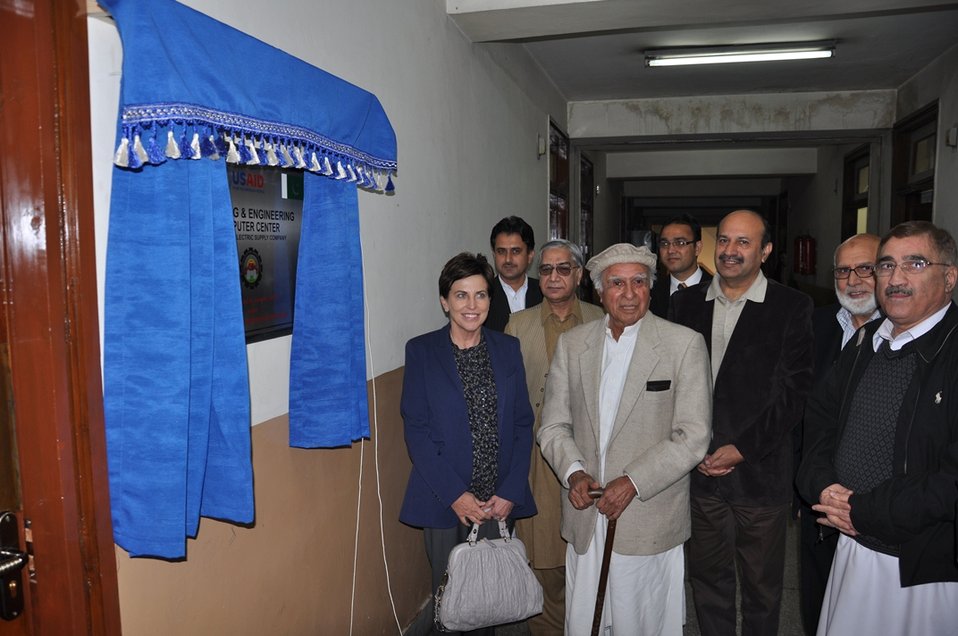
USAID Providing State-of-the-Art Planning and Engineering Equipment to PESCO

The United States is strengthening Pakistan’s energy sector and helping to end energy shortages. In this effort, the USAID Power Distribution Program’s Ewa Szajner was on hand to support the inauguration of a computer center at the Peshawar Electric Supply Company (PESCO). The PESCO CEO and Board of Directors Chairman were also present at the inauguration with senior management from the USAID Power Distribution Program.